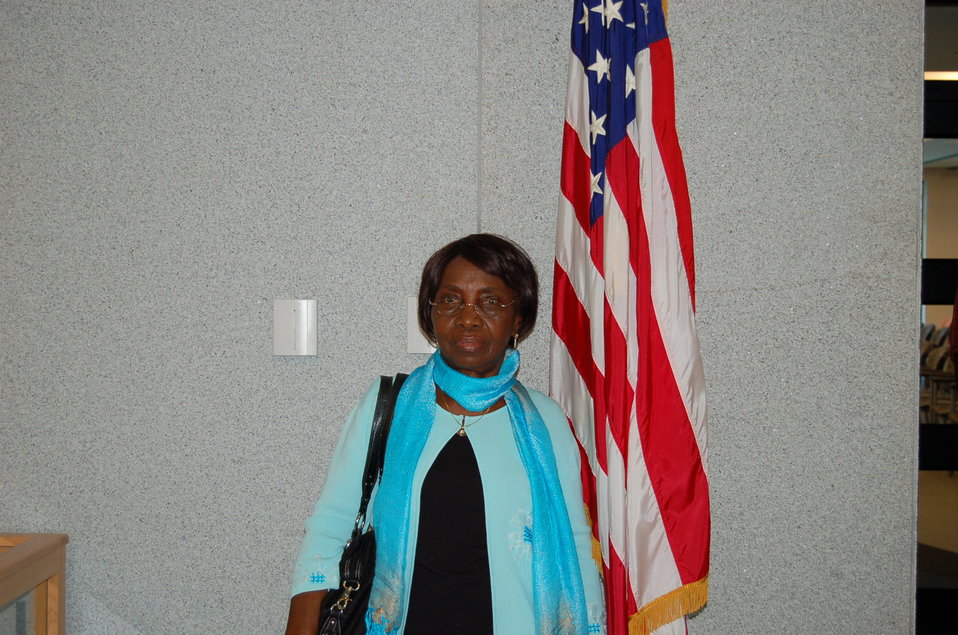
New Citizens